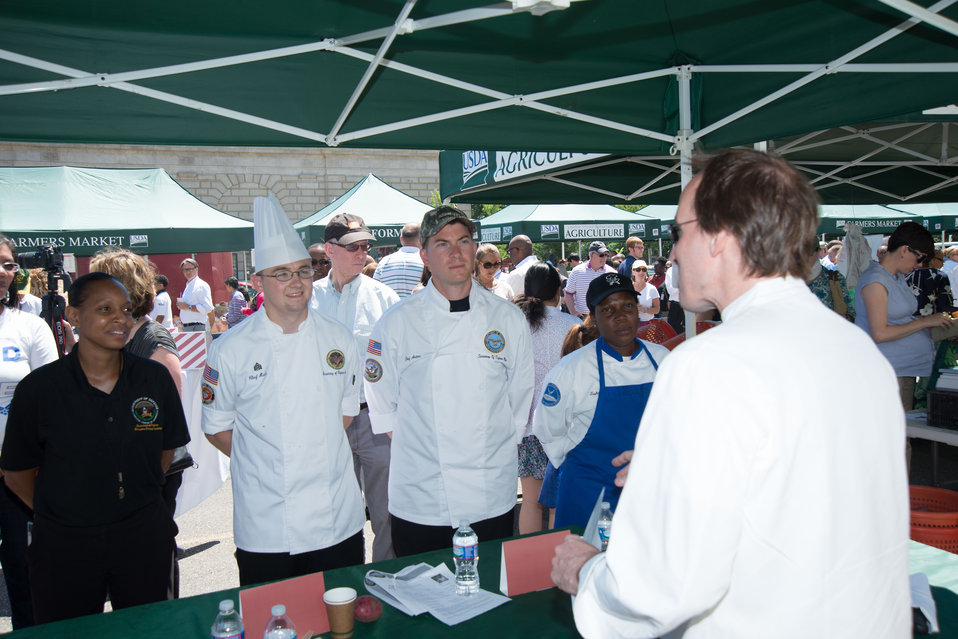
Celebrity judge Chef Eric Ziebold announces the winner of the Military Barbecue battle at the opening day of USDA’s Farmers Market in the east parking lot of USDA in Washington, D.C. on Friday, Jun. 6, 2014. (L to R U.S. Army Sergeant (SGT) Monique Sorrell, U.S. Marine Corps SGT Joseph Hale, U.S. Navy Culinary Specialist First class (CS1) George Arters and U.S. Air Force Staff Sergeant (SSgt) Tasha N. Goodrich).